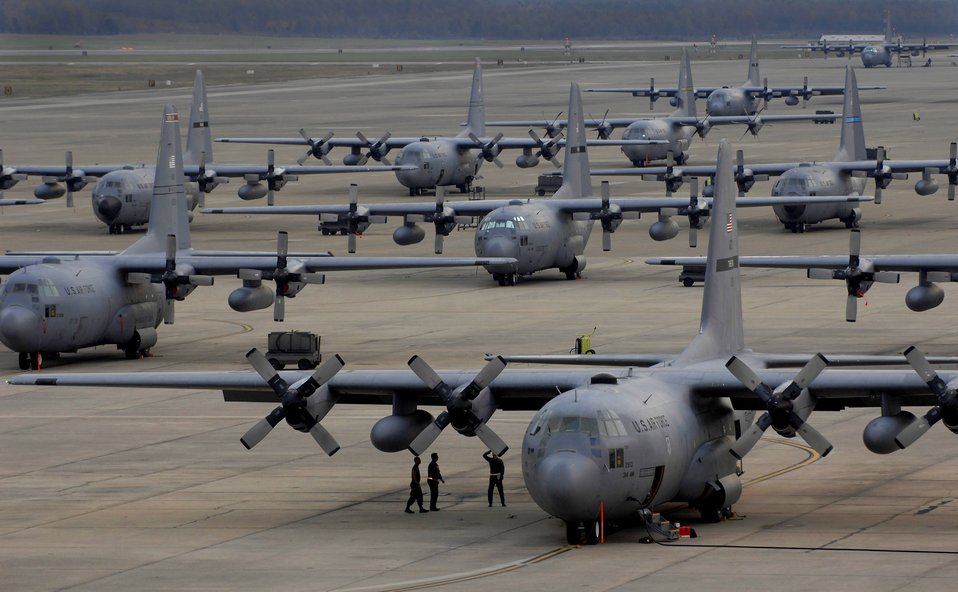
Training to make a herculean effort

A crew performs pre-flight checks on a C-130 Hercules moments before a scheduled take off at Little Rock Air Force Base, Ark., Nov. 1.